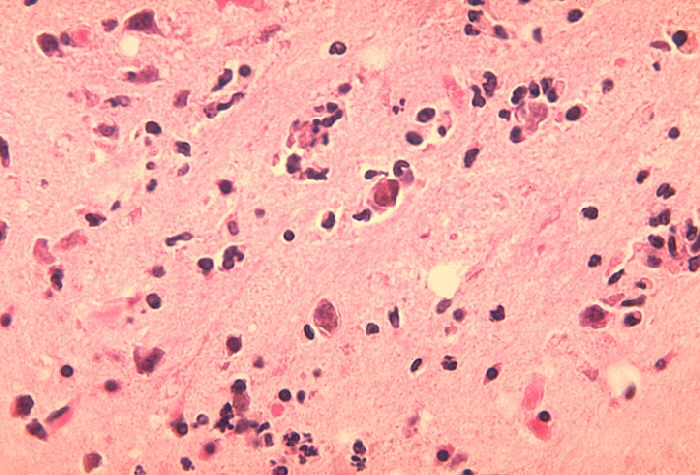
Histopathology of Acanthamoeba polyphaga infection in mouse brain.